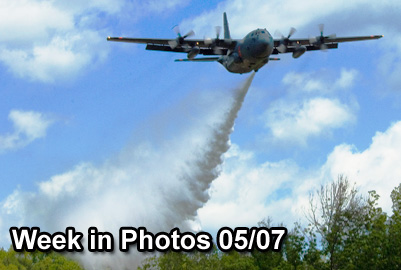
Week in Photos

Air Force Week in Photos for May 7, 2010, highlights photos from around the Air Force. In this photo by Airman 1st Class Nicholas Carzis, a C-130 Hercules drops water over the treetops while training with the Modular Airborne Fire Fighting System near Greenville, S.C., April 28, 2010.